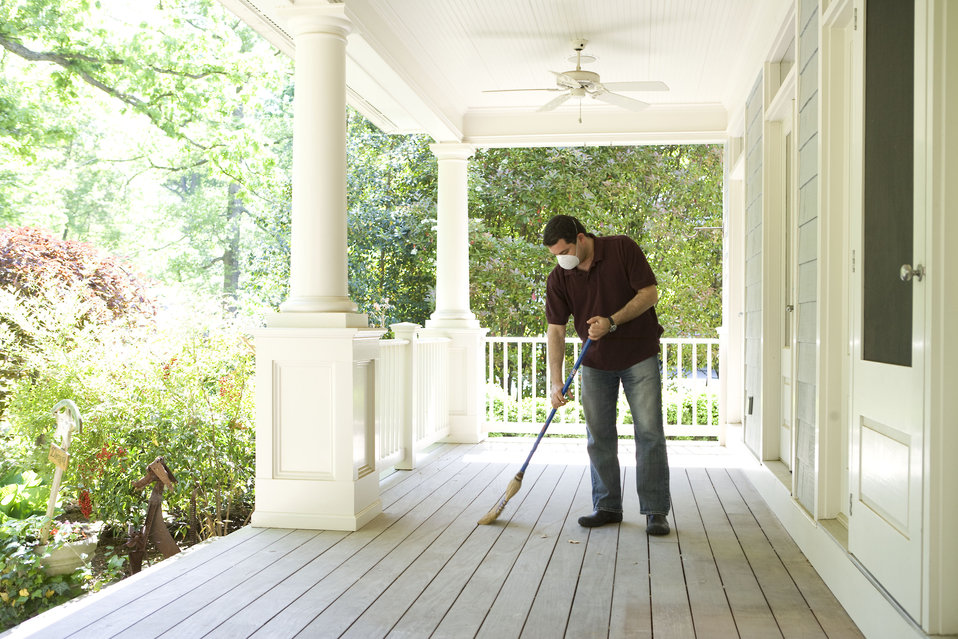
Home maintenance includes both the indoor, and as was the case here, outdoor environment, and is an ongoing process with which a homeowner need to keep up in order to provide for a healthy living space. Keeping your porch dust-free reduces the amount of contaminants tracked into the house.This man was in the process of cleaning his home's porch using a broom, as well as a water hose. In this way, airborne particulates including dust and pollen, could be removed from this area of his home, reducing the detrimental effects upon his family's respiratory systems. These irritants can sometimes result in sinus infections, and asthma.